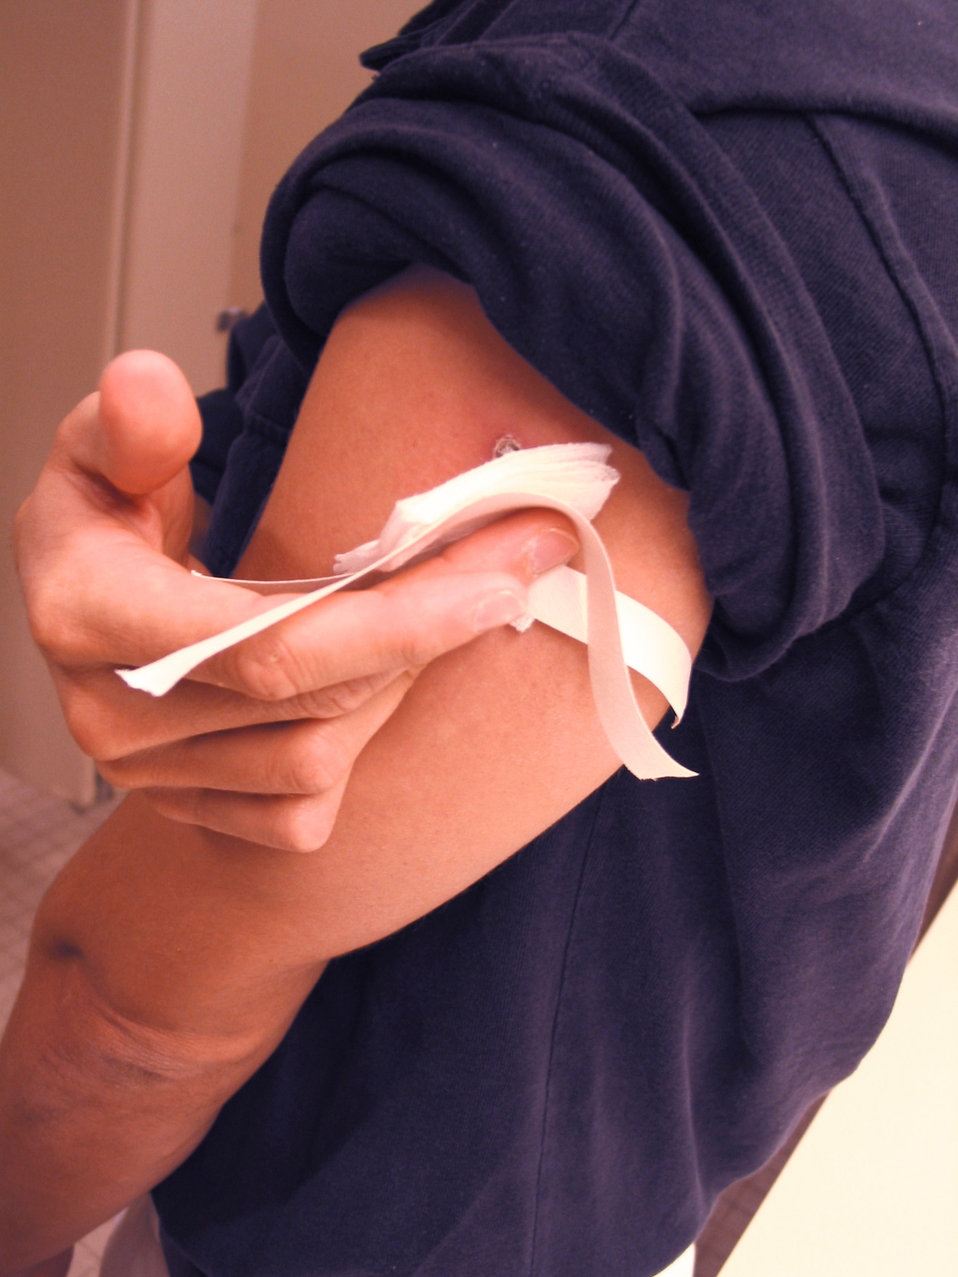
This demonstrates how a smallpox vaccinee covers his vaccination site with a gauze bandage and medical tape.